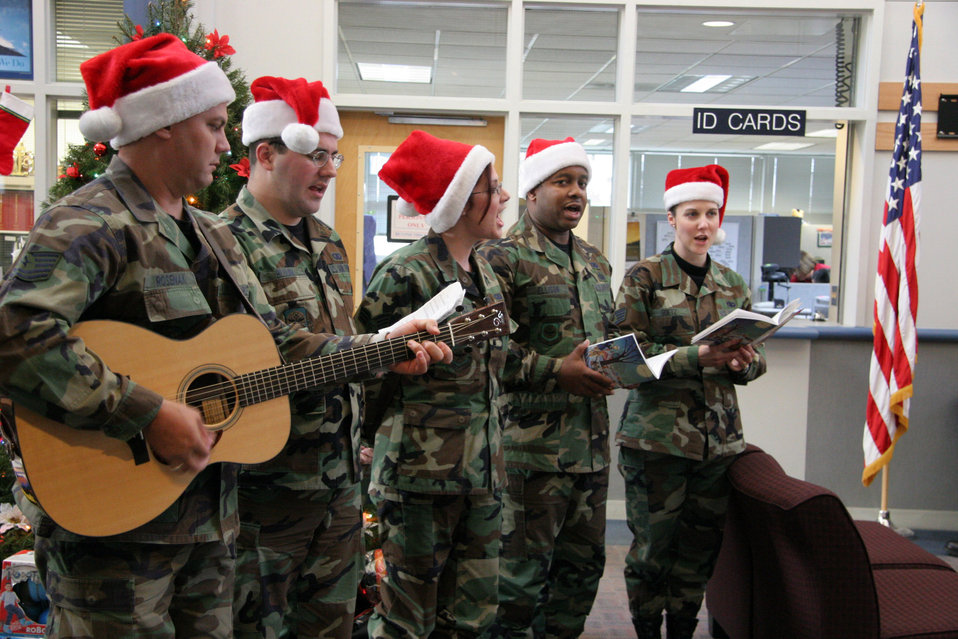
Here we go caroling...

PORTLAND INTERNATIONAL AIRPORT, Ore. -- (From left) Tech. Sgt. Gary Rosenak, Senior Airman Micah Blouin, Senior Airman Bonnie Ramsey, Staff Sgt. Ronicle Ellison and Staff Sgt. Paula Goetz sing Christmas Carols to Airmen from the 939th Air Refueling Wing here.